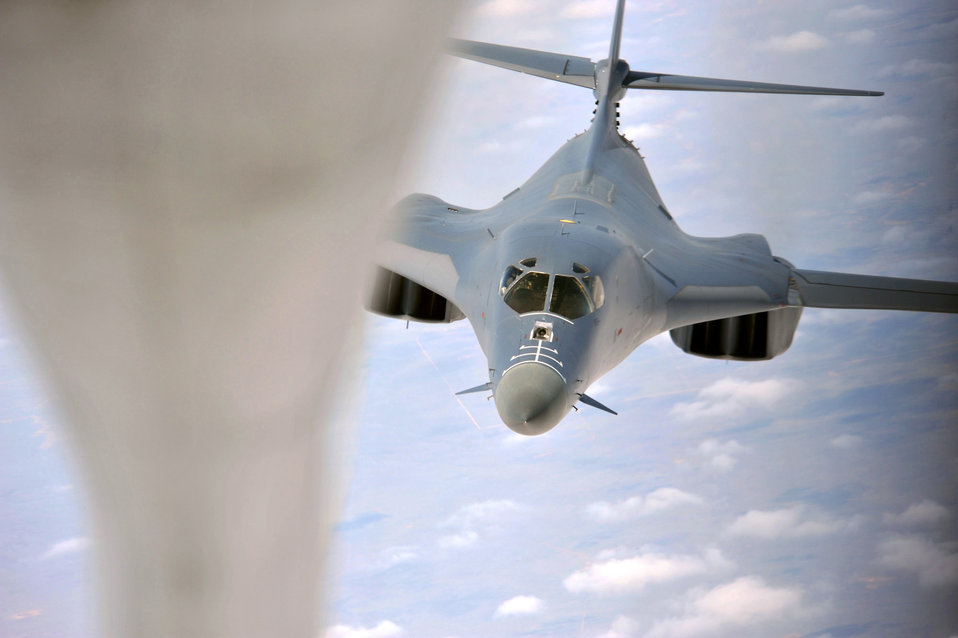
Air Refueling

A B1B Lancer prepares to receive fuel from a KC-135 Stratotanker above Northern New Mexico, Apr. 21, 2010. The Lancer is assigned to Dyess Air Force Base, Texas, and the Stratotanker is assigned to McConnell Air Force Base, Kan.